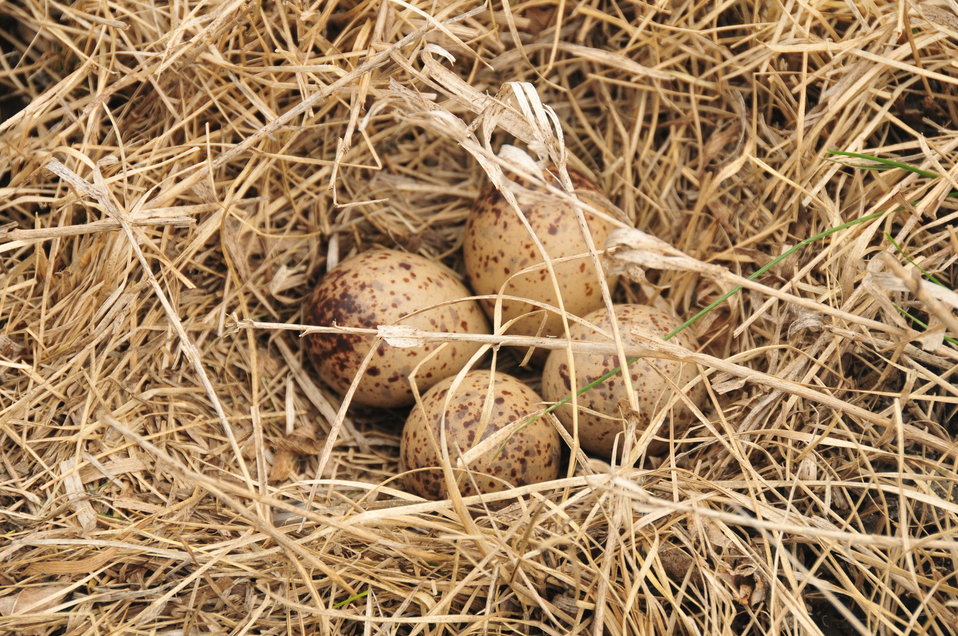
Upland Sandpiper Nest

The nest of an upland sandpiper found in grassland of Sand Lake Wetland Management District.